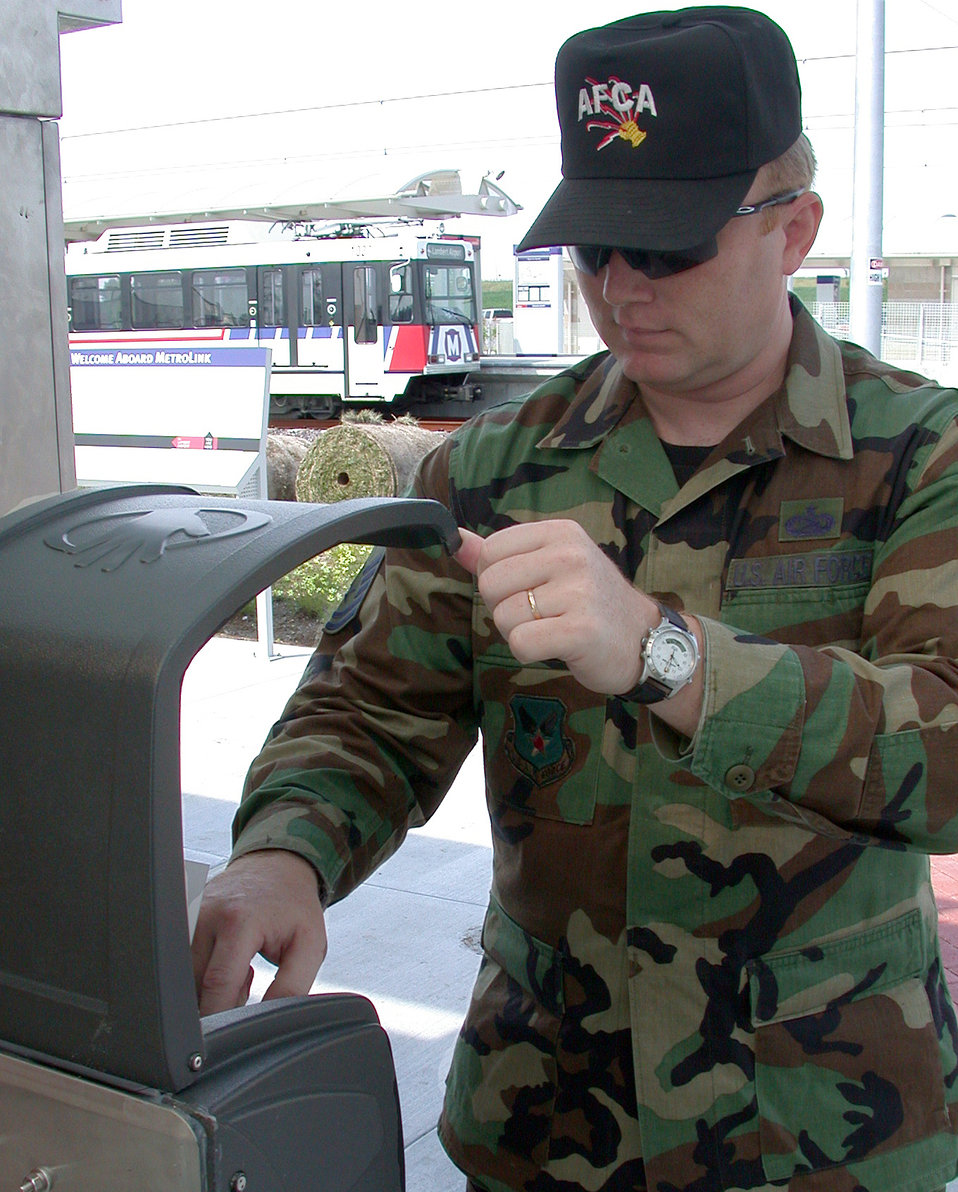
Hand check

SCOTT AIR FORCE BASE, Ill. -- Master Sgt. Wayne Repke uses a hand scanner to gain access to the base here. The scanner is being used in a 90-day test period, along with other security devices, in lieu of having a security-forces airman guard the gate. Repke is assigned to the Air Force Communications Agency here.